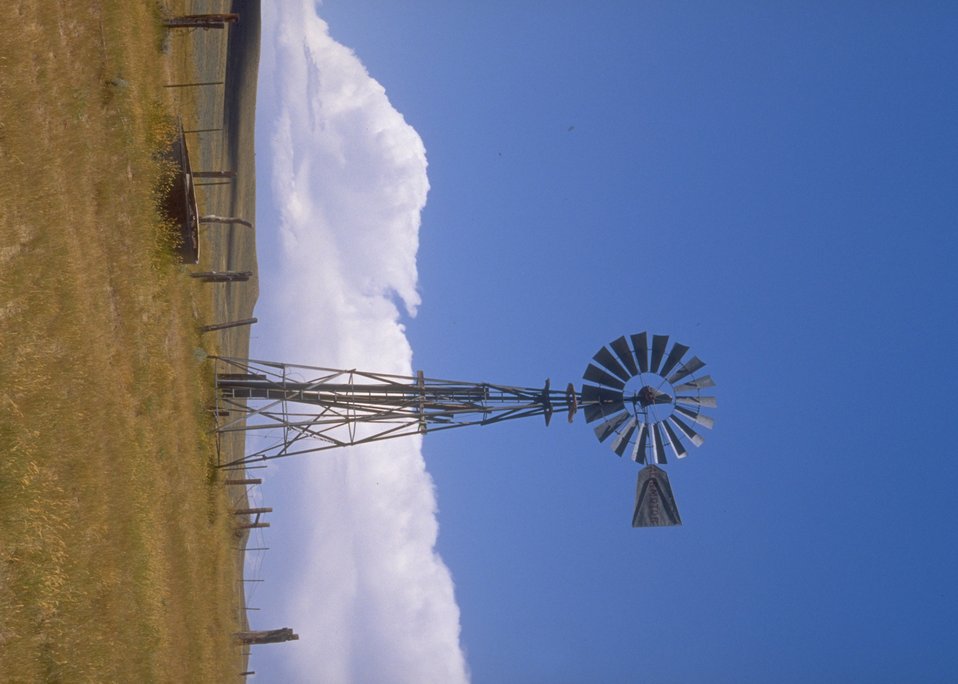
Windmill south of Gillette, WY